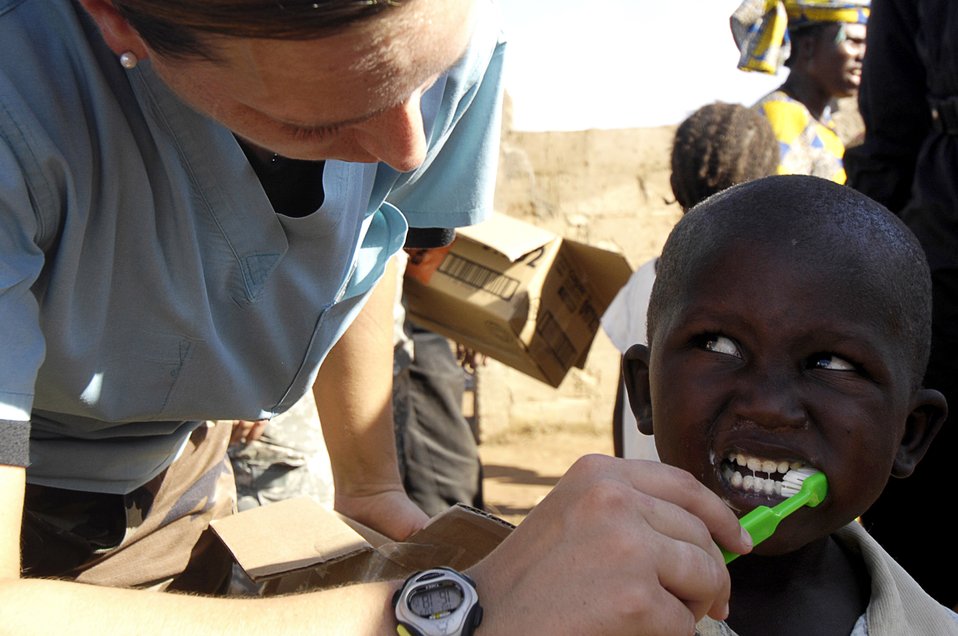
Helping hand

Staff Sgt. Patricia Wheatley helps a boy brush his teeth during a medical capabilities exercise in Senkoro, Mali, Sept. 3. The exercise is designed to foster relationships of peace, security and cooperation among the Trans-Sahara nations. Sergeant Wheatley is deployed from Ramstein Air Base, Germany